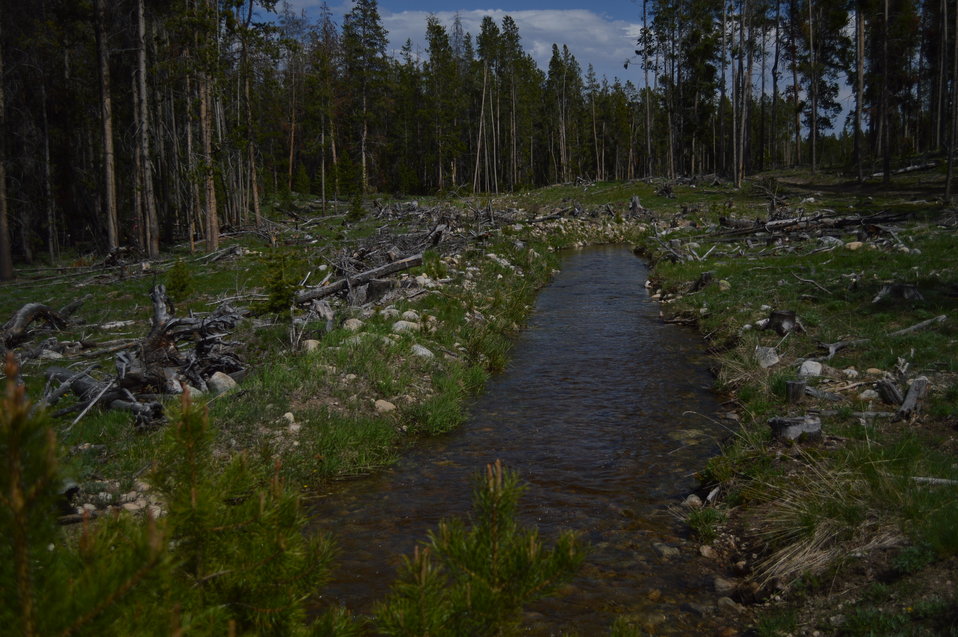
Regional Leadership Visit to Montana 2014